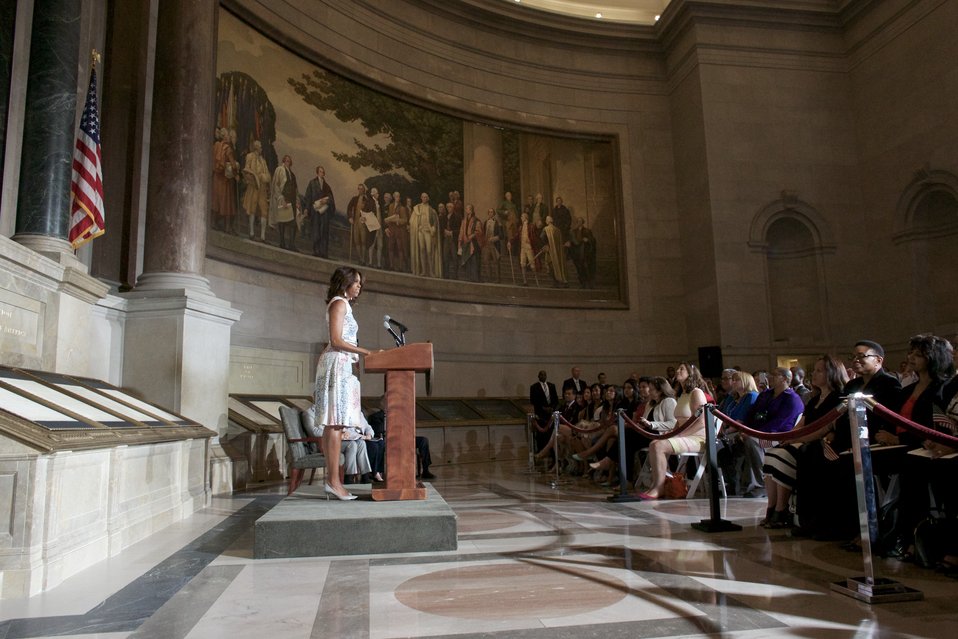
Naturalization Ceremony with Michelle Obama